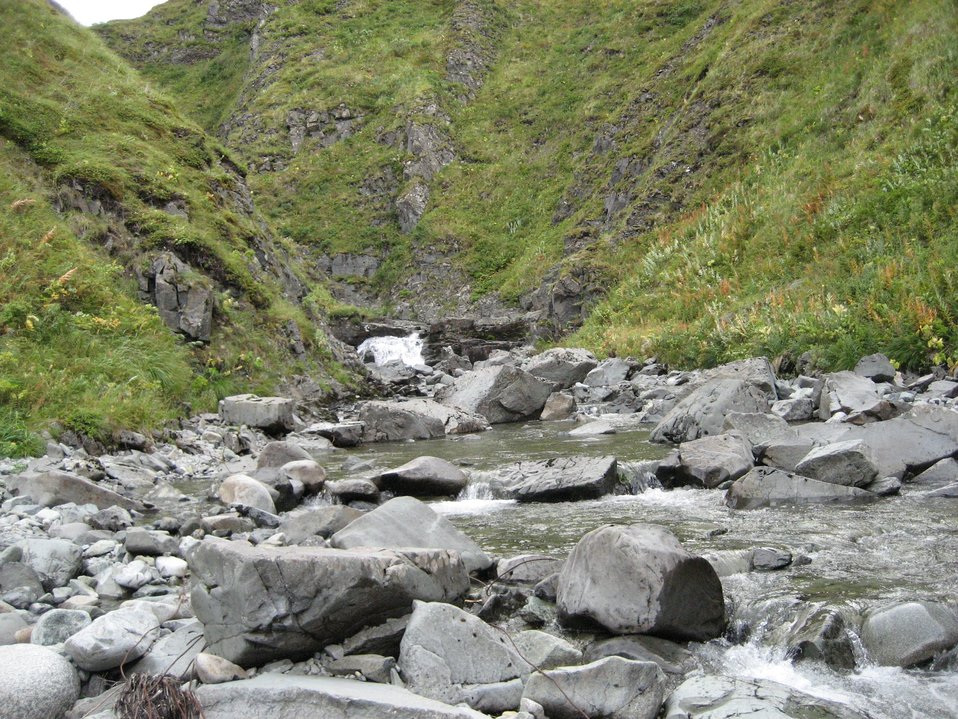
A babbling brook at Dutch Harbor.